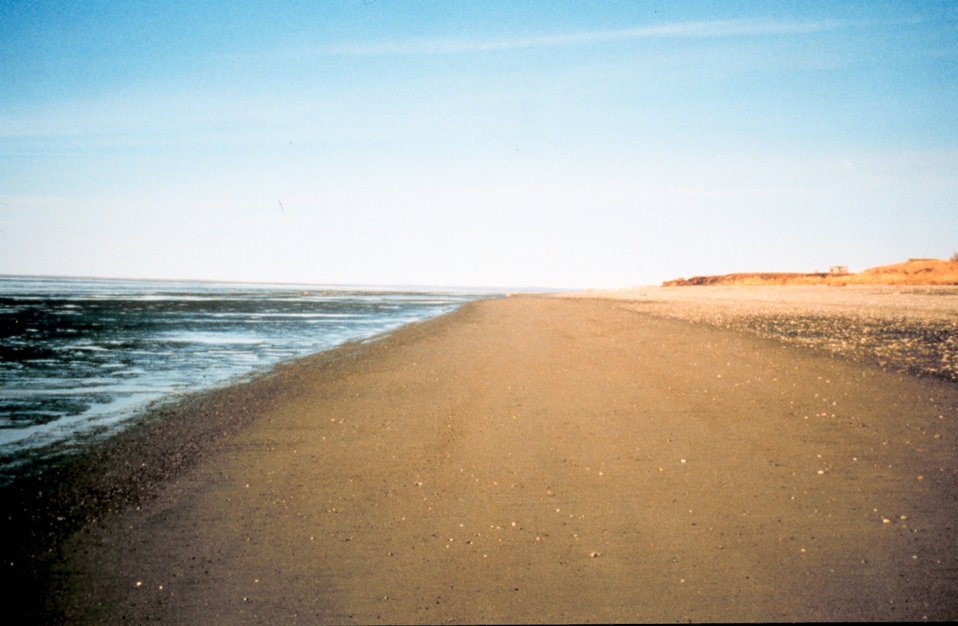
Looking north along the beach near Naknek on Kvichak Bay